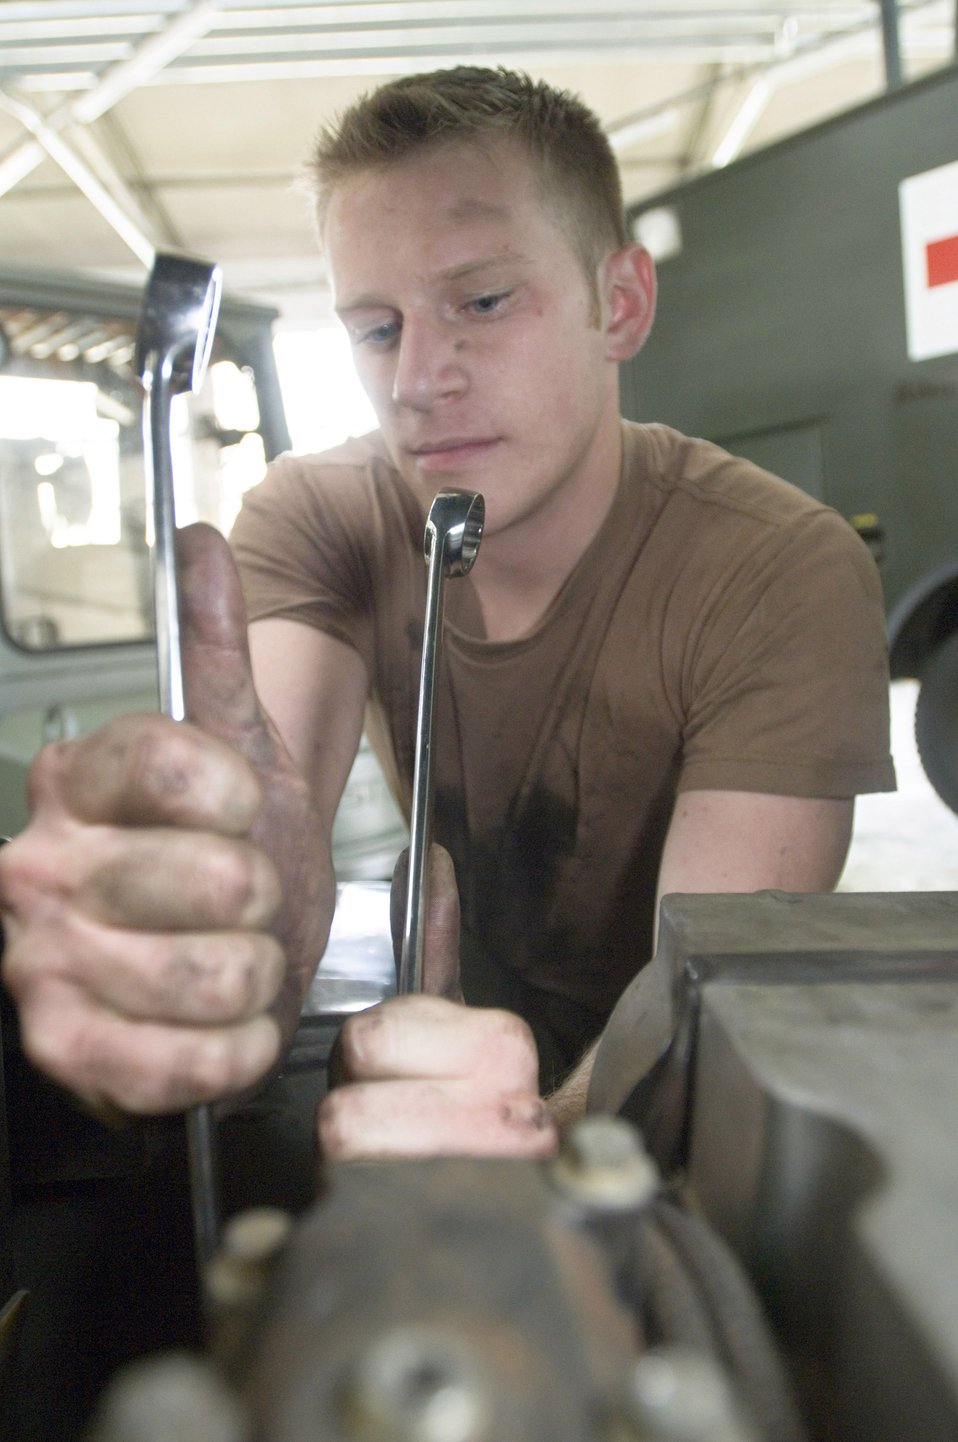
Sembach squadron maintains war reserves

Senior Airman Andrew Henderson completes a periodic maintenance inspection on a forklift Sept. 20 at Sembach Air Base, Germany, ensuring it's ready for immediate worldwide deployment. Airman Henderson is a vehicle and vehicular equipment specialist with Sembach's 435th Materiel Maintenance Squadron.